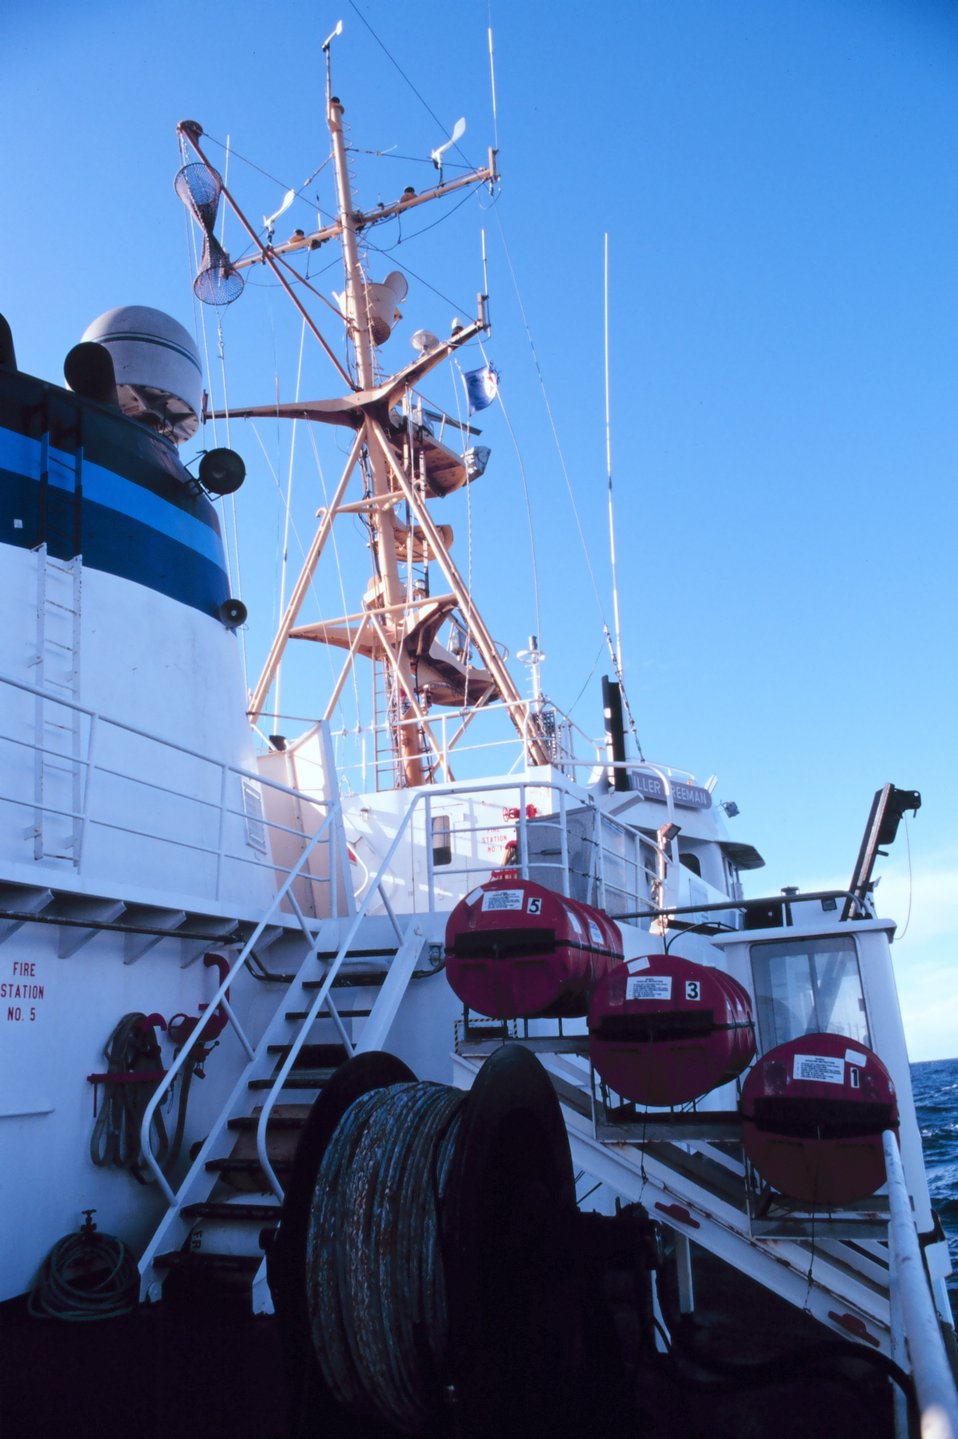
Looking forward on the starboard side of the MILLER FREEMAN.